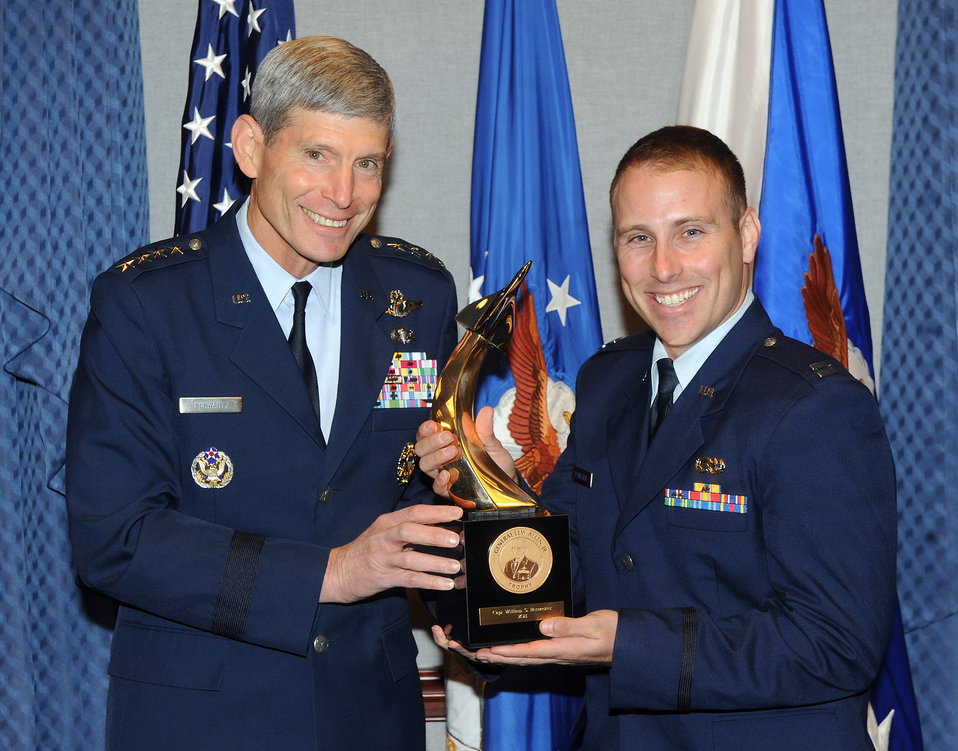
2011 Lew Allen Trophy

Air Force Chief of Staff Gen. Norton Schwartz presents the Gen. Lew Allen Jr. Trophy to Capt. William Bernecker during a ceremony Oct. 28, 2011 in the Pentagon. The trophy is awarded annually to a base-level officers and senior NCO in the aircraft, munitions or missile maintenance fields directly involved in sortie generation.